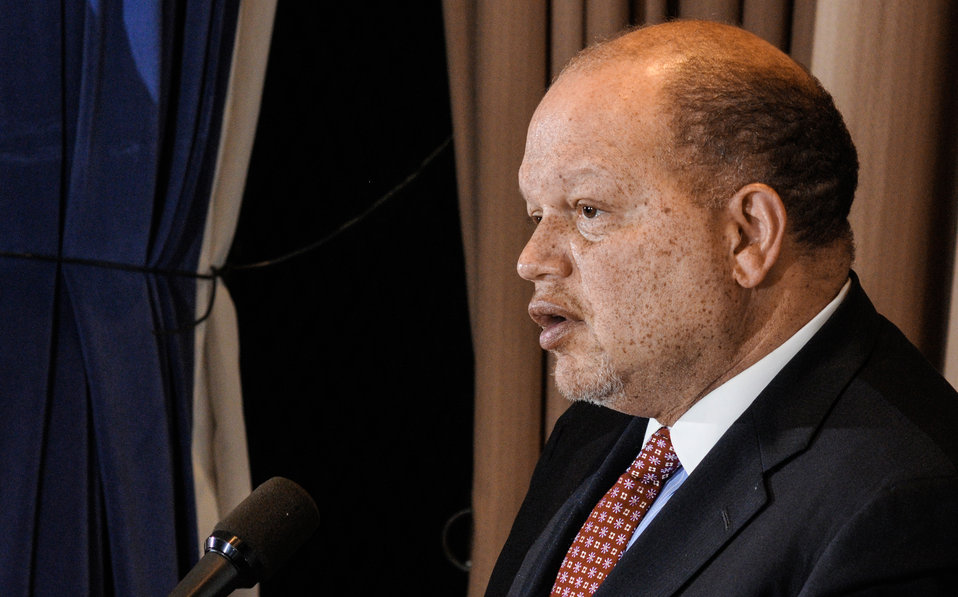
Columbia University of Law, Professor of Law, Theodore Shaw speaks at the U.S. Department of Agriculture (USDA) Dr. Martin Luther King, Jr. National Service Day presentation of the Drum Major for Service Awards at the USDA Jefferson Auditorium, in Washington, D.C., on Tuesday, Jan. 15, 2013.